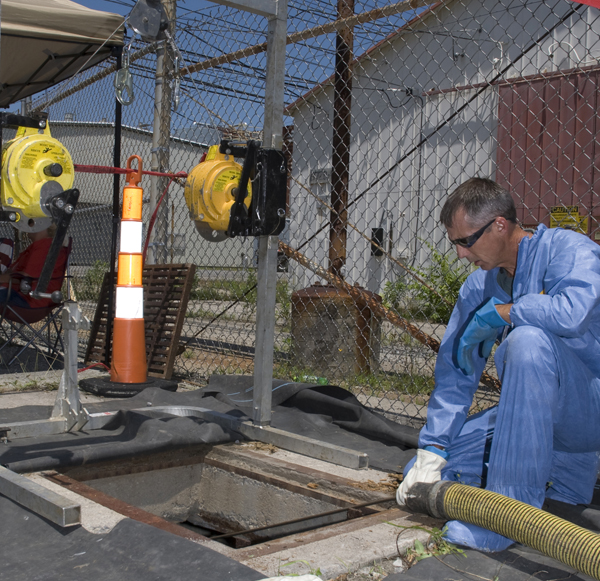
Skilled Workers Bruised by Recession Find New Start in Oak Ridge Recovery Act Work

Efforts to clean up waste from the Manhattan Project and the Cold War are under way at the Y-12 National Security Complex. The seven projects there funded by $216 million from the Recovery Act are providing work for more than 1,500 Americans, many of whom had struggled in the recent recession.

In addition to the work at Alpha 5 and Beta 4, Recovery Act projects at Y-12 include the West End Mercury Area storm sewer cleanup project, removal of soil contaminated with mercury, and the cleanup of a 7-acre scrap yard. In January 2011, Recovery Act workers completed the demolition of Building 9211 at Y-12, which reduced the footprint of the Cold War legacy by more than 83,000 square feet.